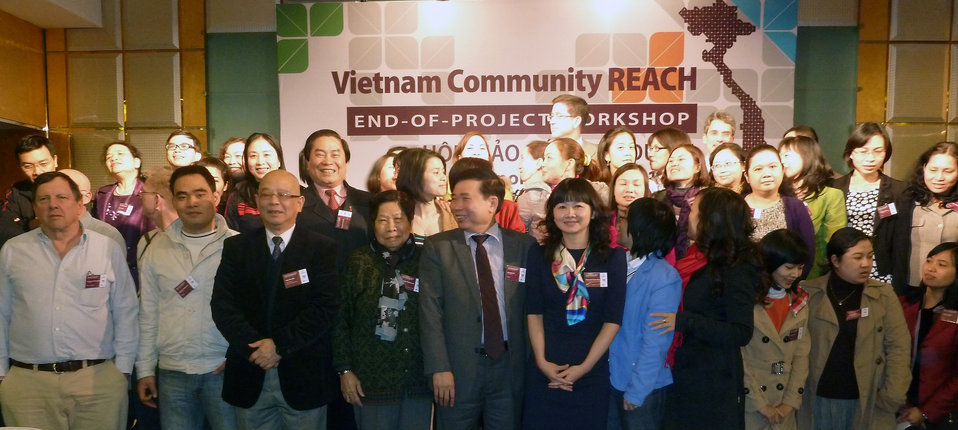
USAID, PEPFAR, and Pact award certificates to local and international partners for their work in addressing HIV in Vietnam

Community REACH project close-out with USAID and implementing partner, Pact